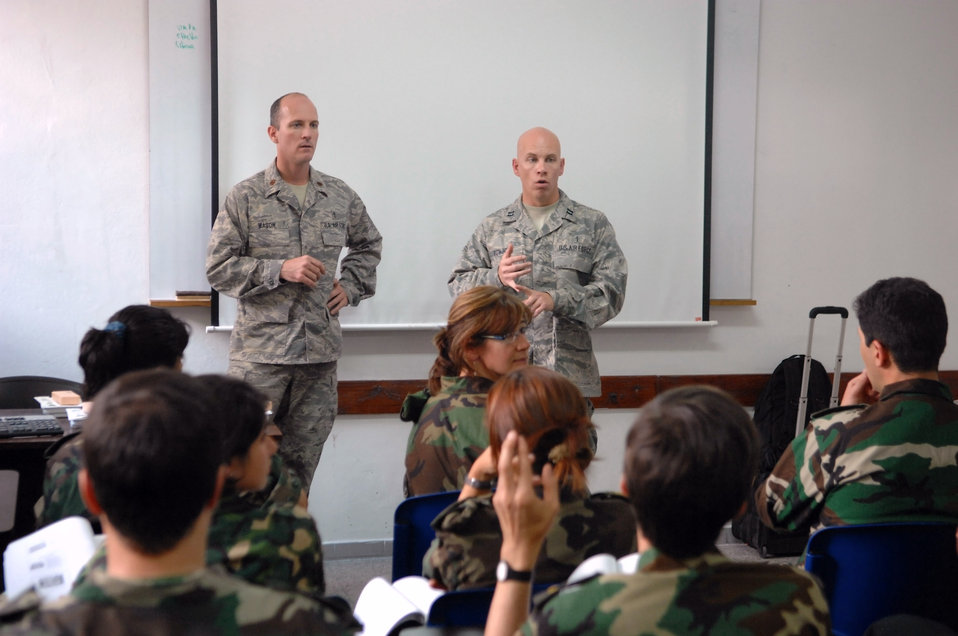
Forces combine to share disaster response techniques

Maj. Phillip Mason (left) and Capt. Timothy Bonjour answer questions from Uruguayan military medical counterparts on Nov. 3 in Uruguay. They are part of a Defense Institute for Medical Operation disaster response and medical technique exchange. Major Mason is from Wright-Patterson Air Force Base, Ohio, and Captain Bonjour is from Travis AFB, Calif.